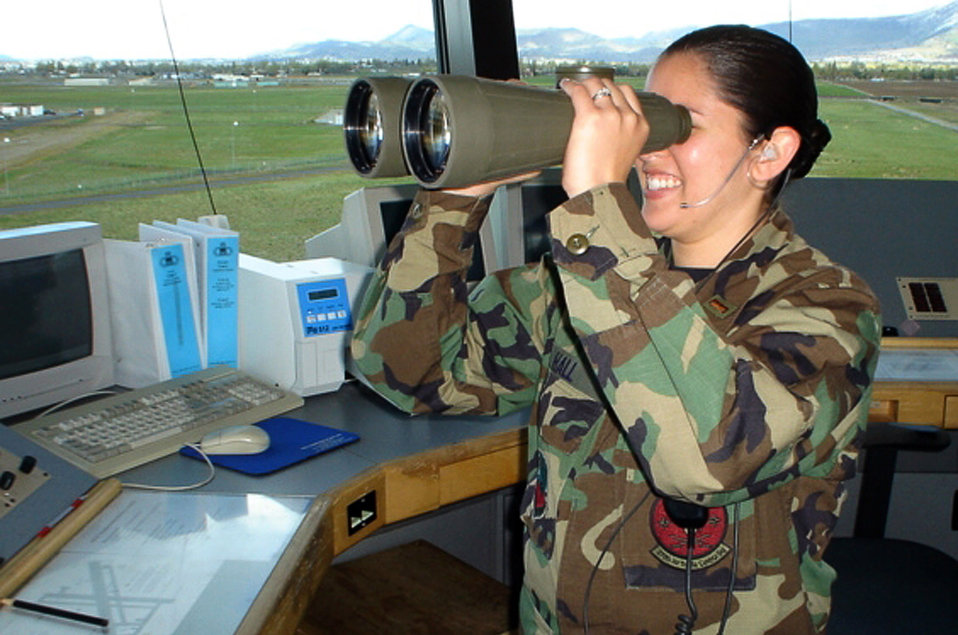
Airfield Operations Officer Training Program

2nd Lt. Chelsea Hall-Reyes trains with the Oregon Air National Guard's 270th Air Traffic Control Squadron at Kingsley Field, Ore., as part of the Air Guard's Airfield Operations Officer Training Program. The program trains active-duty Airmen to become airfield operations officers.